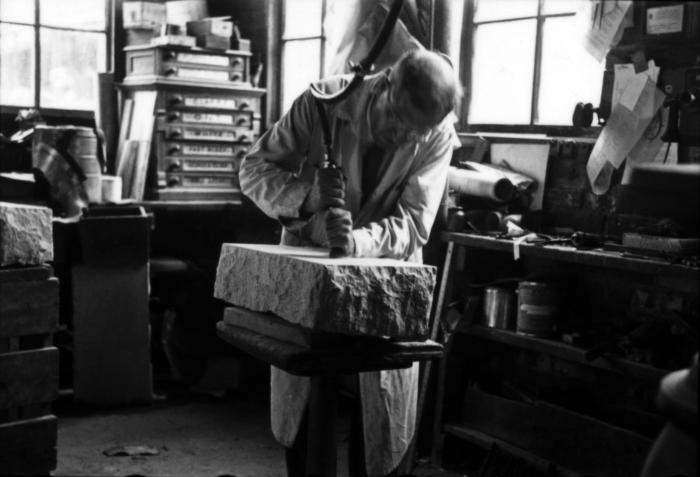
This October 1947 photograph was provided by the Center for Disease Control's (CDC), National Institute for Occupational Safety and Health (NIOSH). The image depicted a stone cutter who was in the process of carving a granite gravestone with a pneumatic drill in a Kansas workshop. The worker was wearing appropriate eye protection, but not sporting the requisite filtered respirator or mask, which would have limited his exposure to airborne granite dust particulates. Workers can be exposed to potential respiratory health hazards, as well as other physical injuries when working in stone cutting and quarrying industries. In industrial settings such as this, workers can be exposed to potential respiratory health hazards, especially when working in a chemical industry setting.